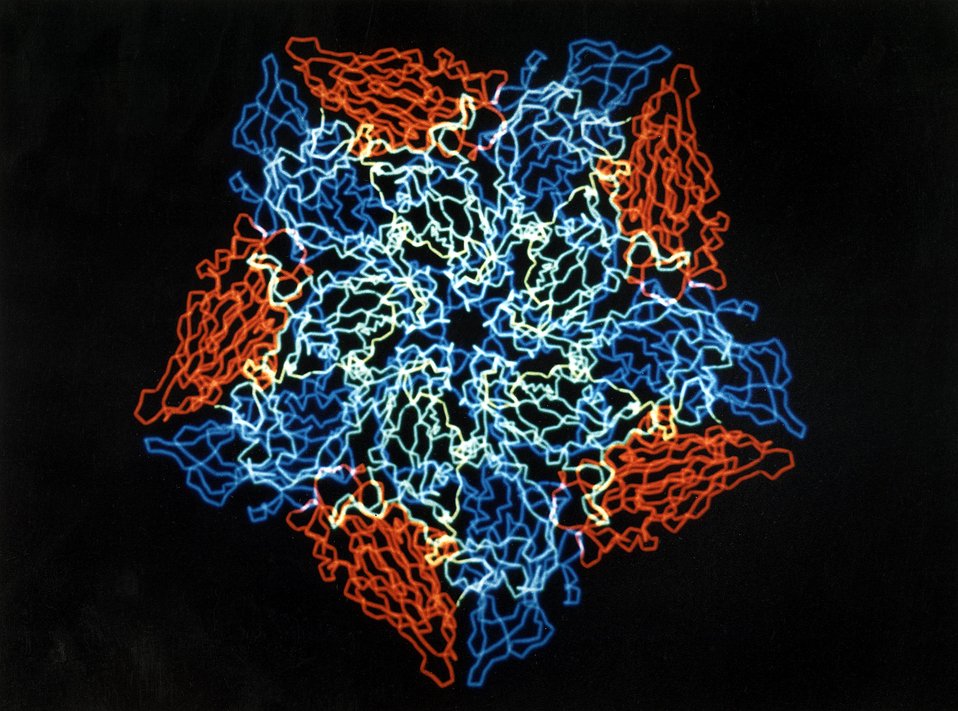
The Many Faces of Cold Virus HRV14. The protein coat of the human rhinovirus HRV14 is composed of 12 pentameric caps each containing five copies of the three coat proteins, VP1, VP2, ans VP3. The computer reconstruction shown here illustrate one of these fivefold-symetric units, with red, green, and blue used to denote the three constituent proteins.